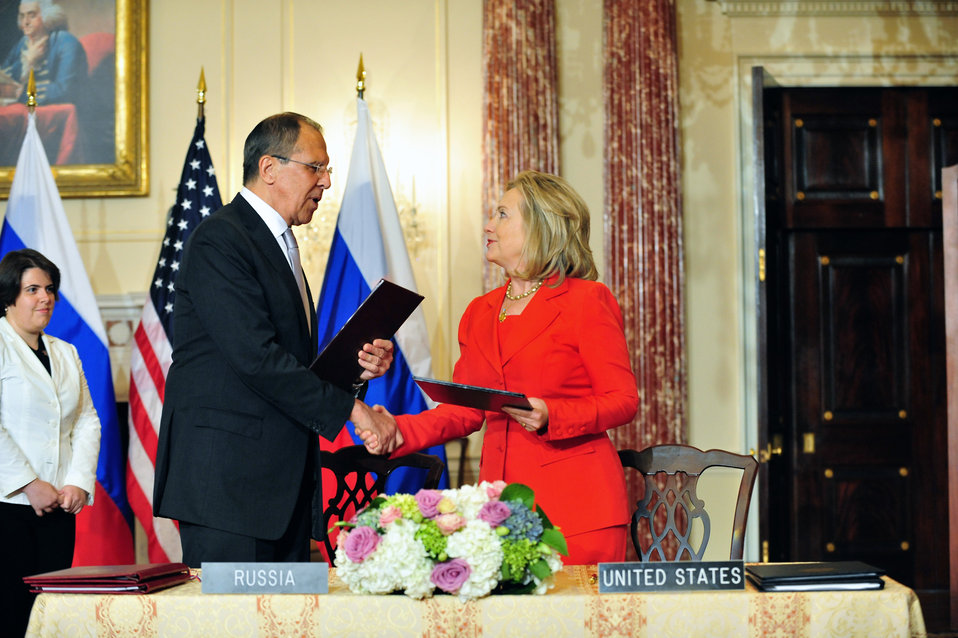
Secretary Clinton Shakes Hands With Russian Foreign Minister Lavrov

U.S. Secretary of State Hillary Rodham Clinton shakes hands with Russian Foreign Minister Sergey Lavrov after a signing ceremony at the U.S. Department of State in Washington, D.C., on July 13, 2011.